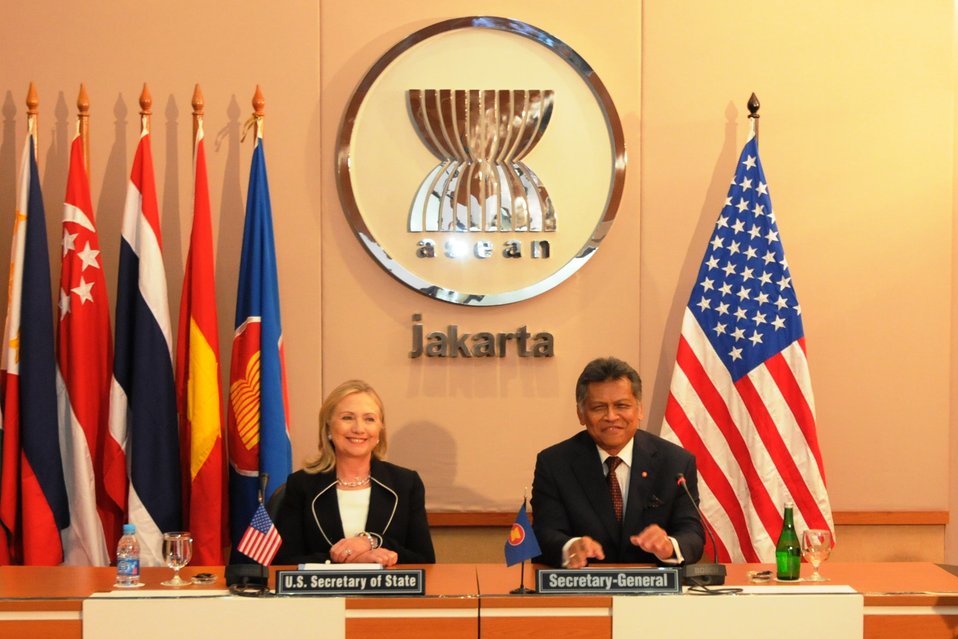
Secretary Clinton Meets With meets with ASEAN Secretary General Pitsuwan

U.S. Secretary of State Hillary Clinton meets with ASEAN Secretary General Surin Pitsuwan in Jakarta, Indonesia, September 4, 2012.